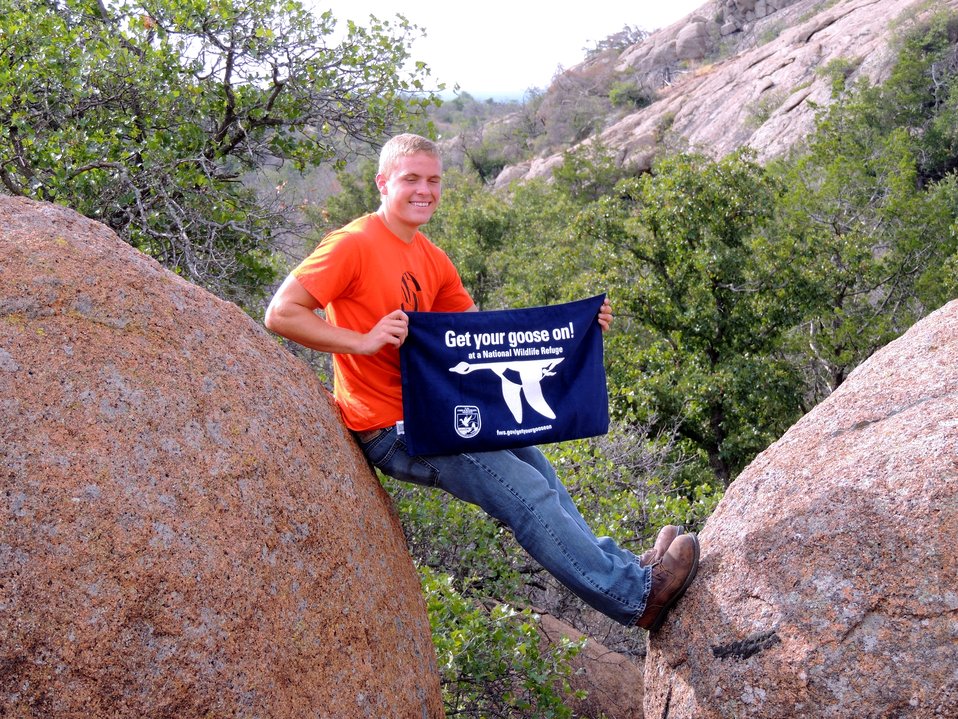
Get Your Goose On!

Wichita Mountains National Wildlife Refuge in Oklahoma.